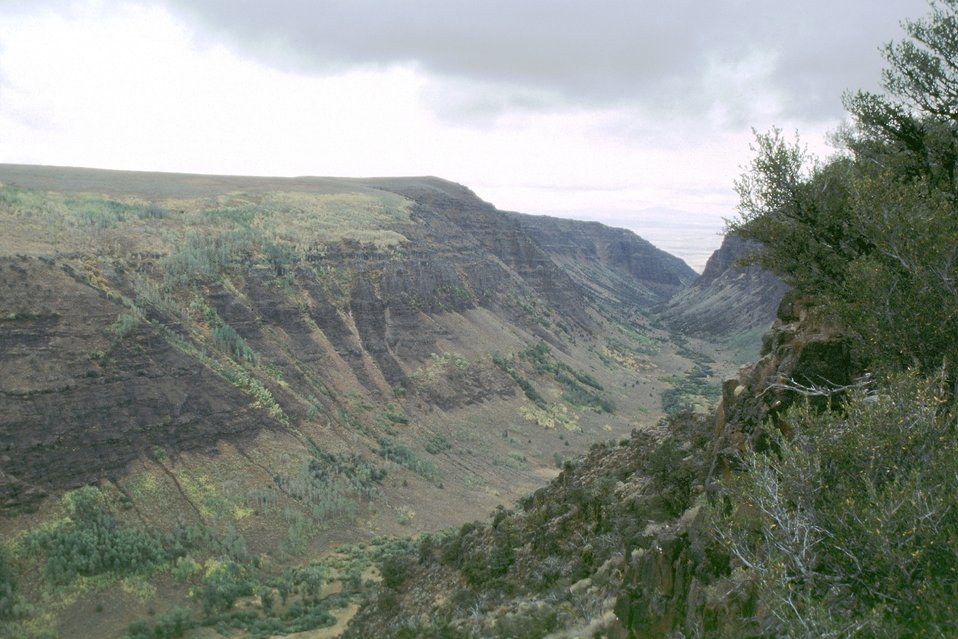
Little Blitzen looking West from Pruitt Overlook, Steen's Mountain.